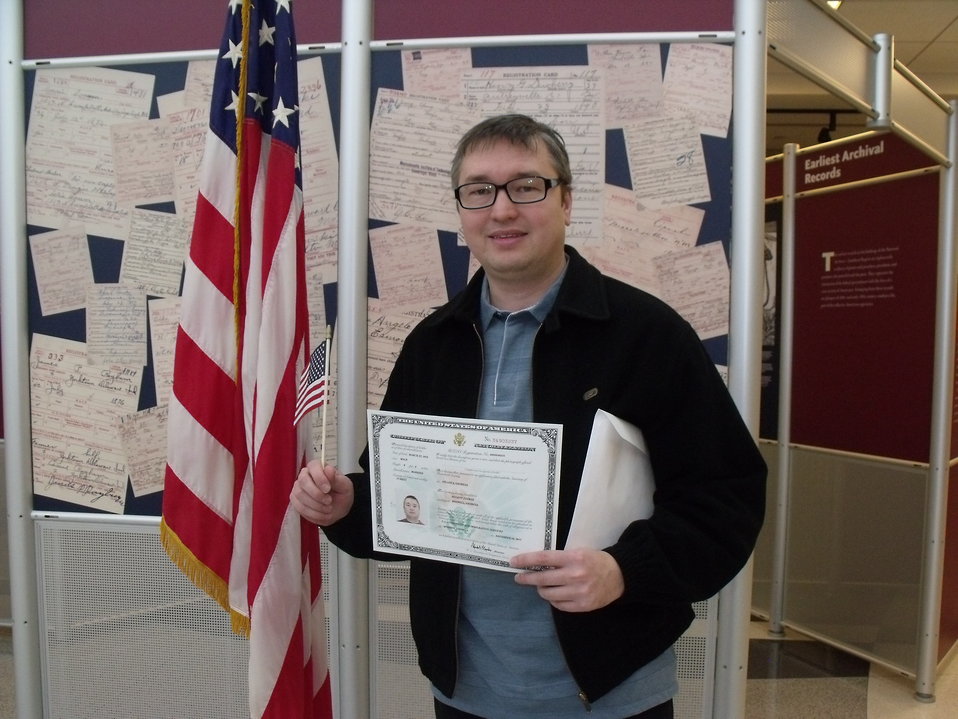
New Citizens